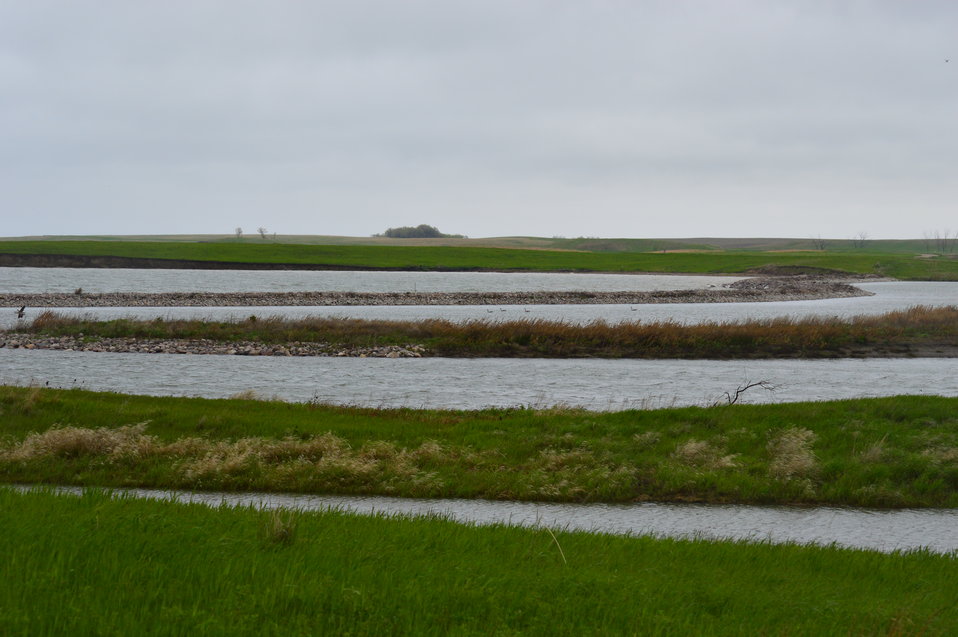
Scenery along the auto tour route

Scenery and wildlife and Audubon National Wildlife Refuge in North Dakota.